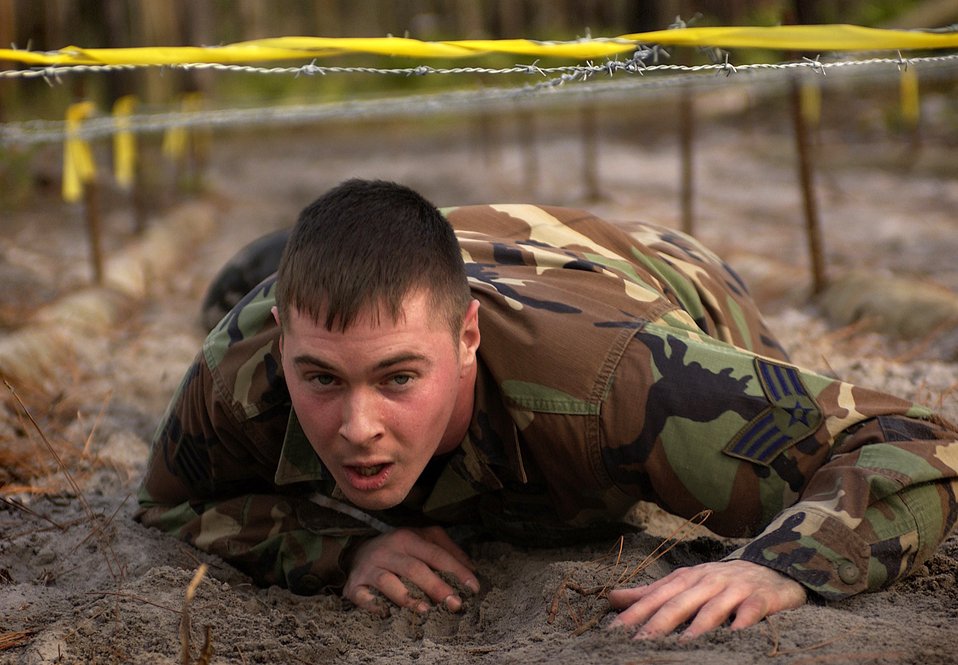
Keep your head down

AVON PARK, Fla. -- Senior Airman Justin Pilant low crawls through an obstacle during Dragon Challenge 04 here Dec. 5. Dragon Challenge is an annual competition held where airmen compete for top honor in physical strength, endurance, mental and emotional challenges. Airman Pilant is assigned to the 20th Air Support Operations Squadron at Fort Drum, N.Y.